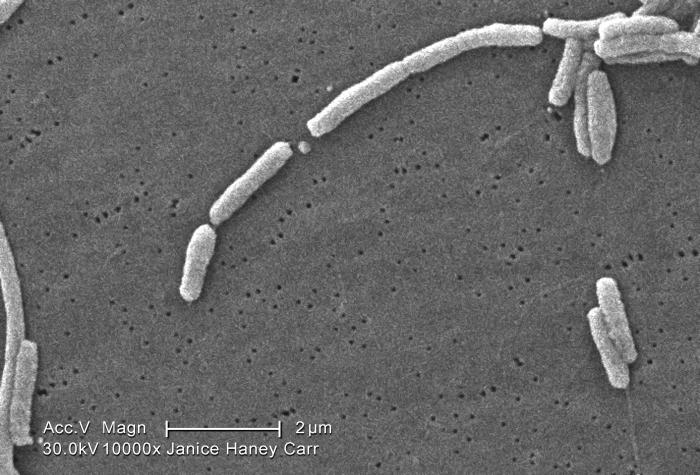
Magnified 10000X, this scanning electron micrograph (SEM) depicted a number of Gram-negative Legionella pneumophila bacteria. Please see PHIL 11092 through 11152 for additional SEMs of these organisms, specifically PHIL 11130 for a colorized version of this image. Of particular importance, is the presence of polar flagella, and pili, or long streamers, which due to their fragile nature, in some of these views seem to be dissociated from any of the bacteria. Both the flagella and the pili are better viewed in the colorized version of this image.